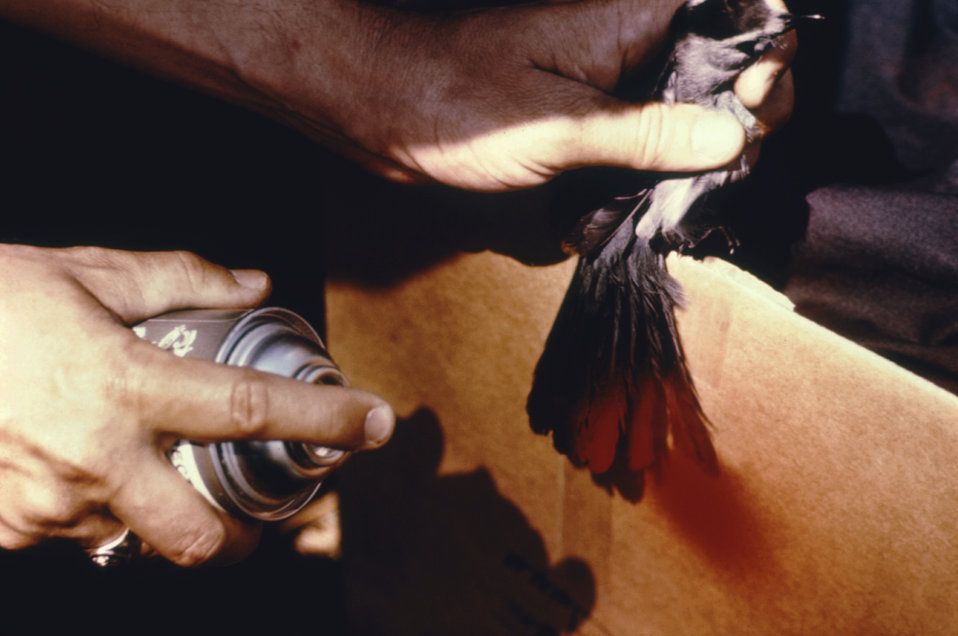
This bird's tail is being temporarily marked with red paint for short-term spotting during a 1974 arbovirus field study.